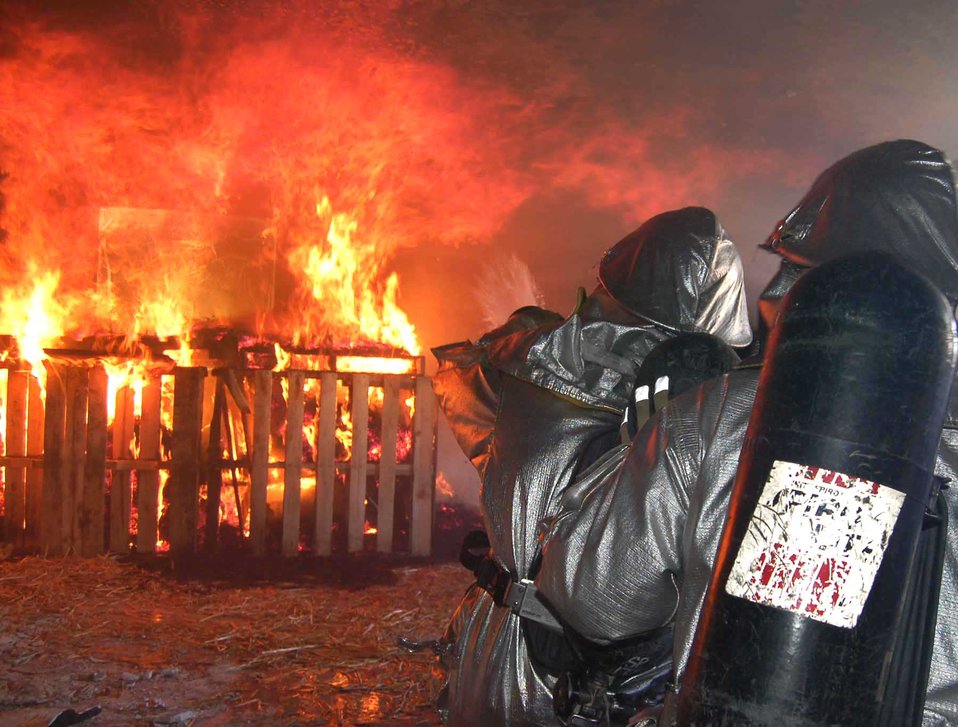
Live-fire training

Senior Airmen William Kretsch and Zachary Hedquist work to contain a fire during a live-fire training exercise at Spangdahlem Air Base, Germany, Sept. 10. The Airmen are assigned to the 52nd Civil Engineer Squadron.